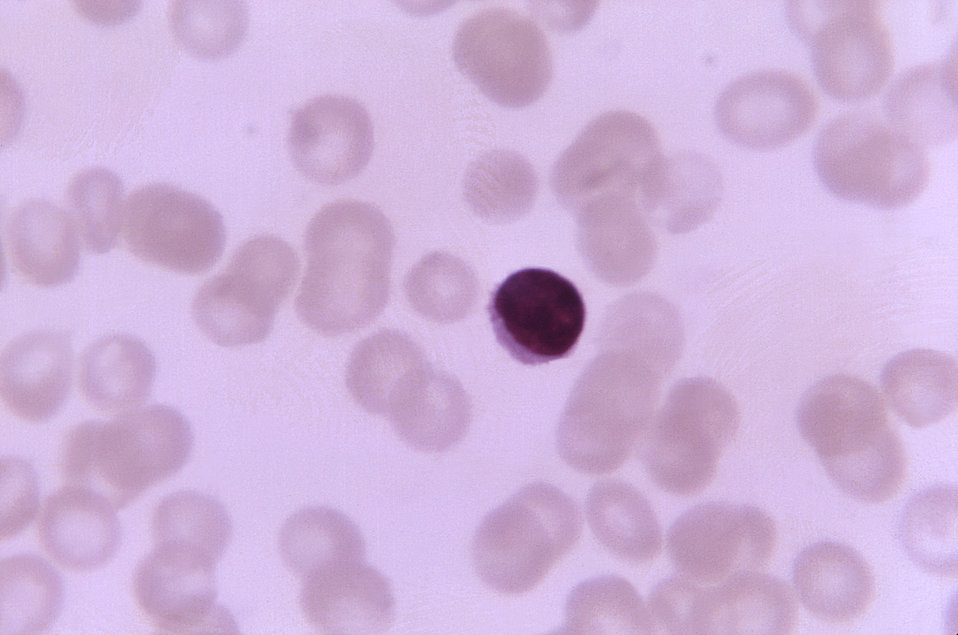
Magnified 1125X, this thin film photomicrograph of a blood smear, revealed the presence of a leukocyte (white blood cell, WBC) known as a lymphocyte.